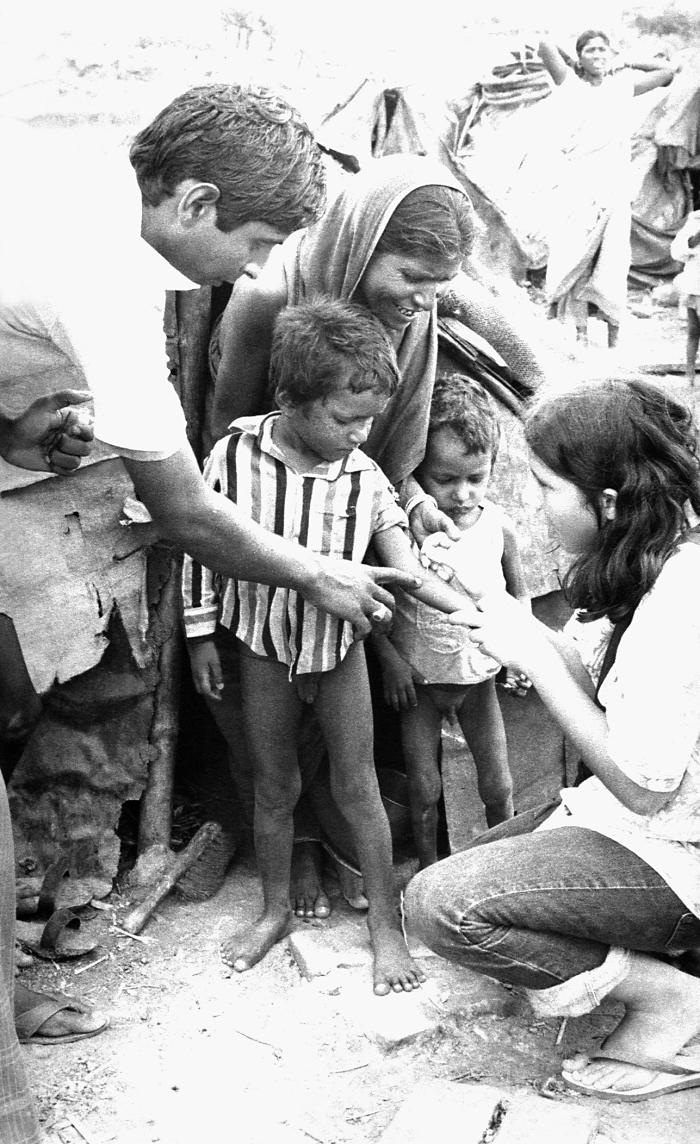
This smallpox eradication team vaccinator, Jennifer Alpern, a vacationing American student, was in the process of administering a vaccine to a young boy who at the time, was living with his family in a bastee, which was an illegal settlement. The bastees were communities where no governmental facilities were present, and where poverty ran rampant. In this image the vaccinator was about to prick the skin of the vaccinee's left forearm with the bifurcated needle after it had been tipped with live vaccinia virus.The vaccine helps the body develop an immunity to smallpox, and is made from a virus called vaccinia, a 'pox'-type virus related to smallpox. The smallpox vaccine contains the 'live' vaccinia virus, not the dead virus, which is the case in many other vaccines. For that reason, the vaccination site must be cared for carefully to prevent the virus from spreading. Also, the vaccine can have side effects. The vaccine does not contain the smallpox virus and cannot give you smallpox.